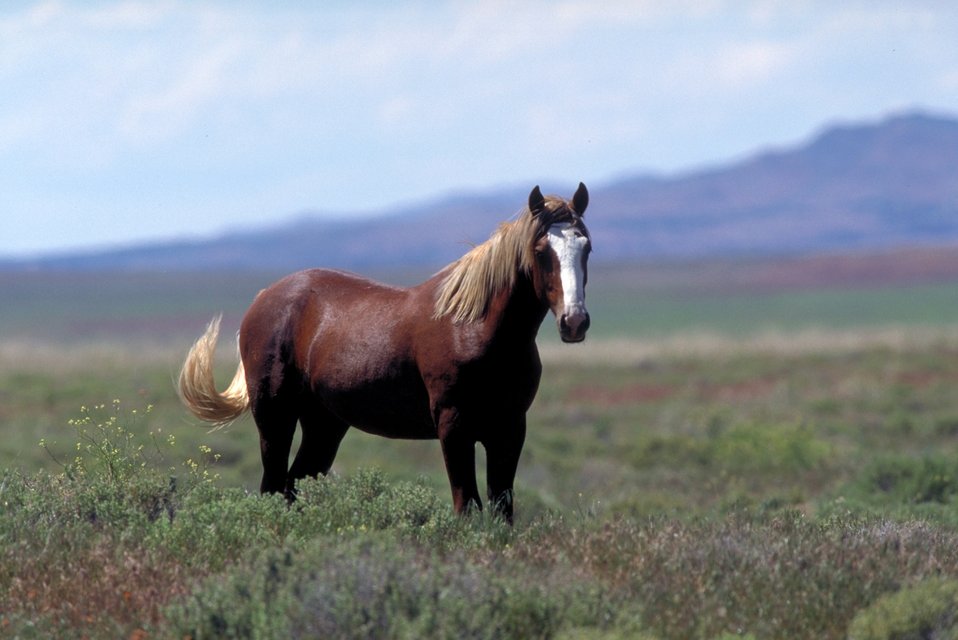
Onaqui Herd near Dugway, Utah.